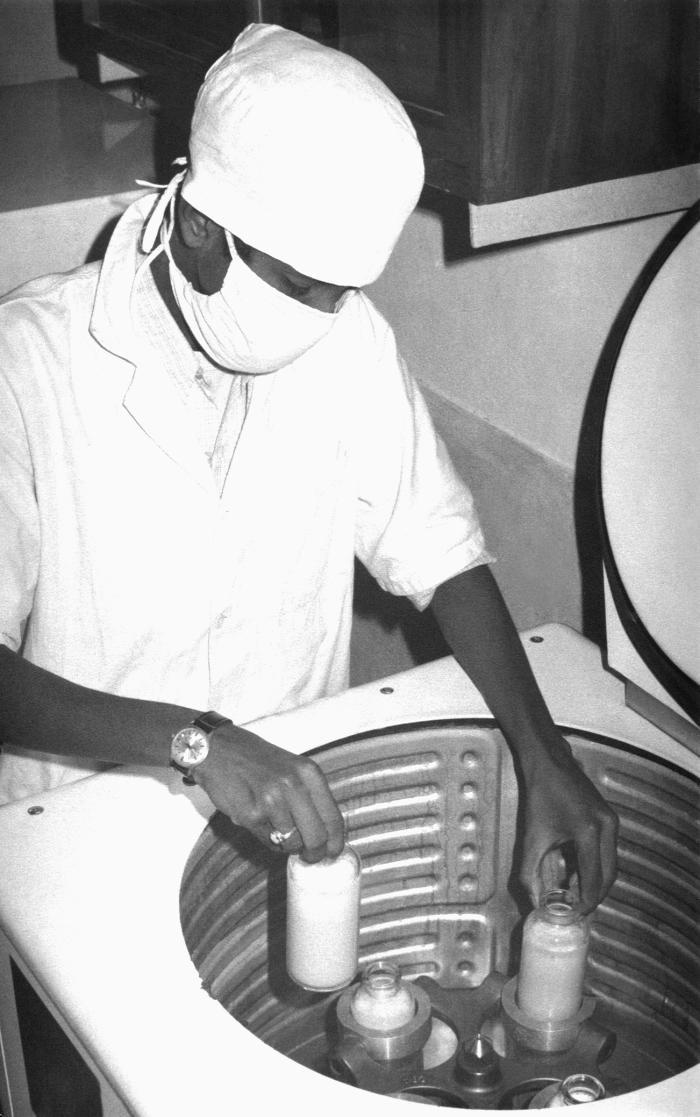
This image depicted a technician in a Bangladesh laboratory who was in the process of creating smallpox vaccine. It was captured by Dr. Stan Foster, EIS, Officer, Class of 1962, and a part of the worldwide Global Smallpox Eradication Campaign of the late 1960s, early 1970s.